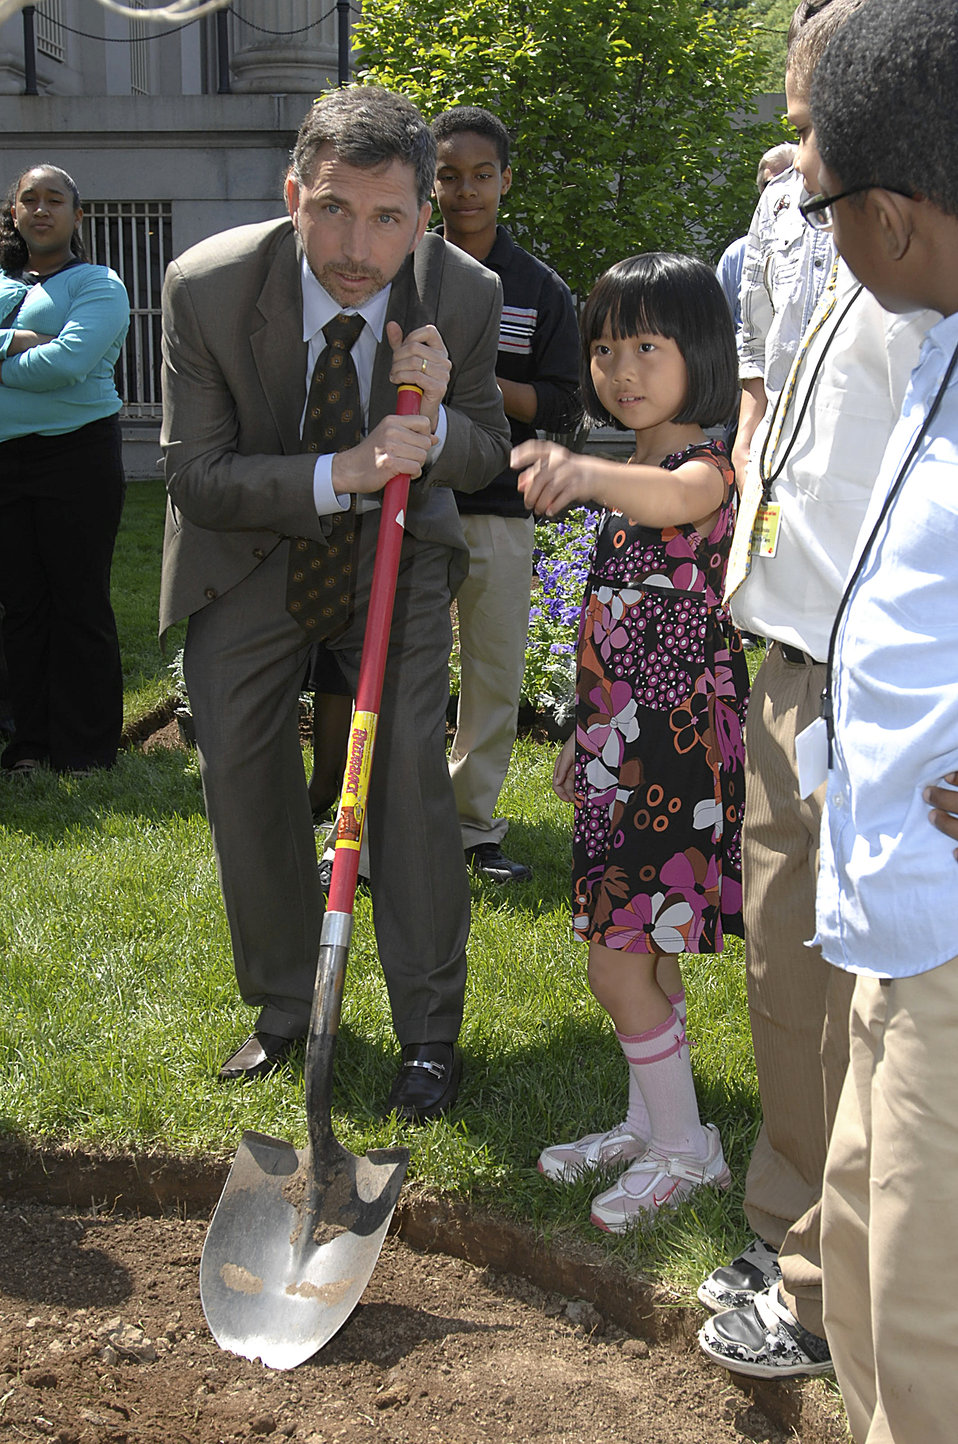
Earth Day/Take Your Children to Work Day, 4/22/10

Assistant Secretary for Management Dan Tangherlini planting a tree for Earth Day with kids of Treasury employees during Take Your Children to Work Day at the Treasury Department on April 22, 2010.